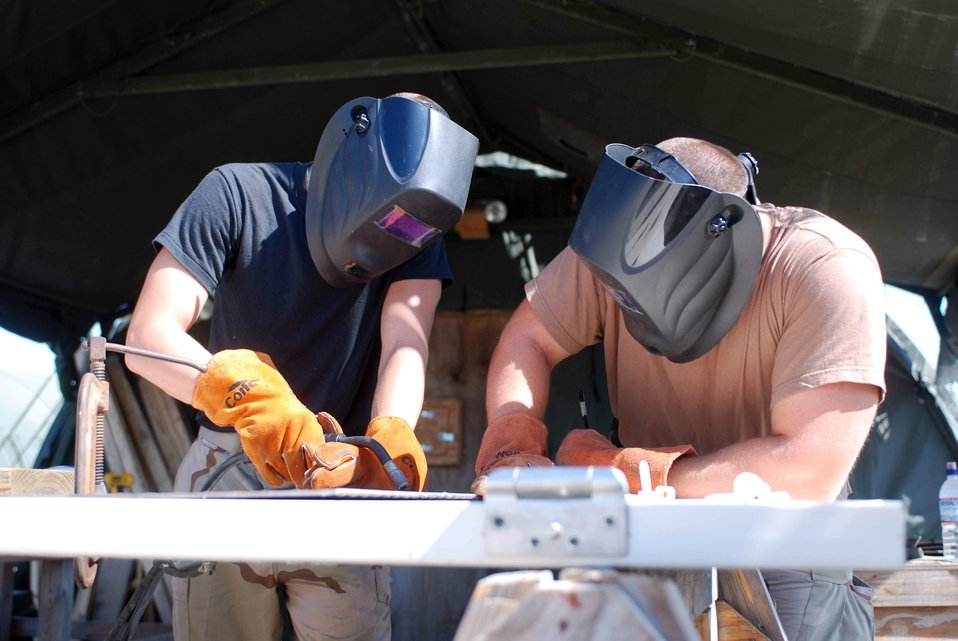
Airmen build legal complex at Camp Justice

Senior Airman Nick Skinner and Staff Sgt. John Heiser weld a detainee cell door March 13 at Camp Justice on Guantanamo Bay, Cuba. Both are members of the 474th Expeditionary Civil Engineering Squadron, which broke ground on the complex Sept. 11, 2007, to construct the Expeditionary Legal Complex. Joint Task Force Guantanamo personnel conduct safe and humane care and custody of detained enemy combatants.